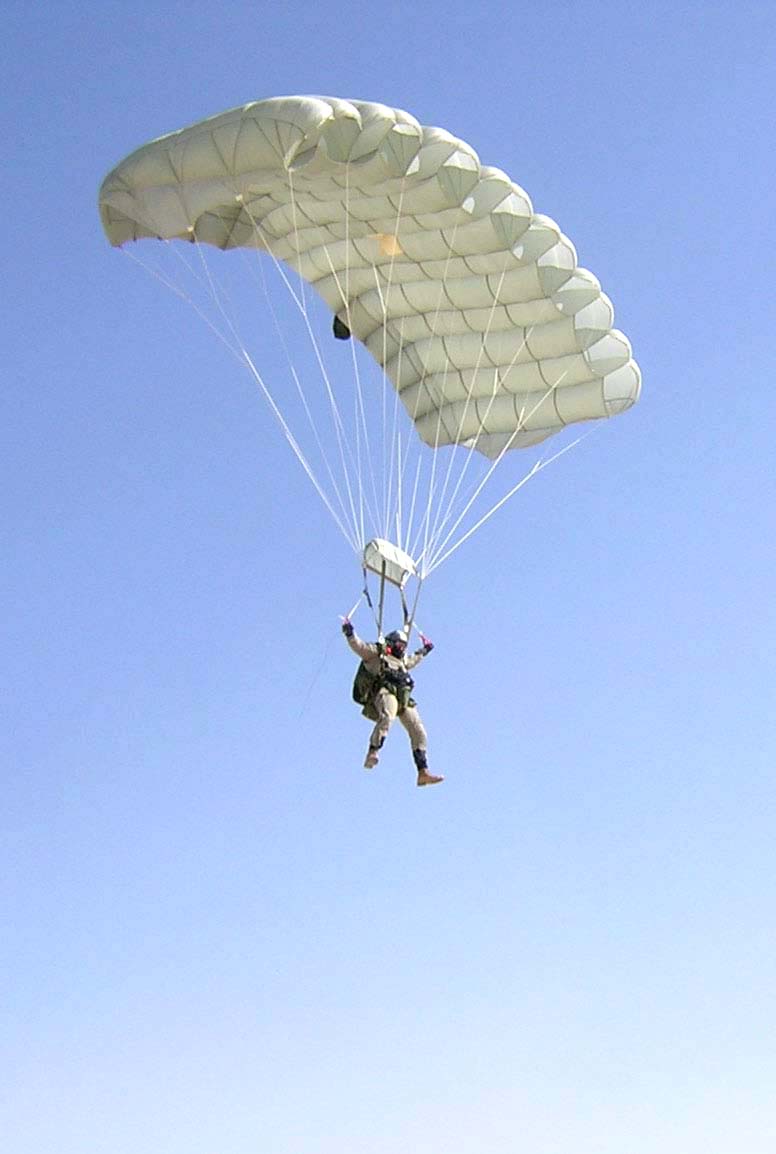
Kandahar pararescuemen poised to save lives

KANDAHAR AIR BASE, Afghanistan -- Senior Master Sgt. Paul Koester parachutes into the airfield here as part of a training mission. Sergeant Koester is a 59th Expeditionary Rescue Squadron pararescuemen. .